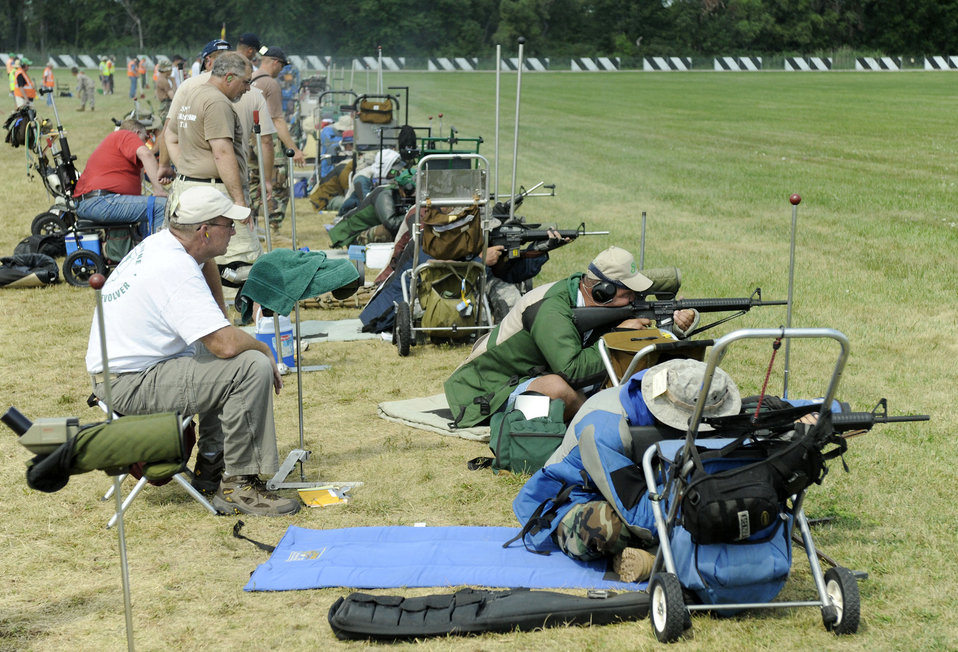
USAF shooting team aims for excellence at national competition

Competitors fire from the prone position during the 600-meter portion of the high power rifle competition of the National Rifle and Pistol Championships Aug. 11 at Camp Perry, Ohio. The championships are sponsored by the National Rifle Association and draw several thousand marksmen from around the United States, including teams from the Army, Air Force, Navy and Marines.